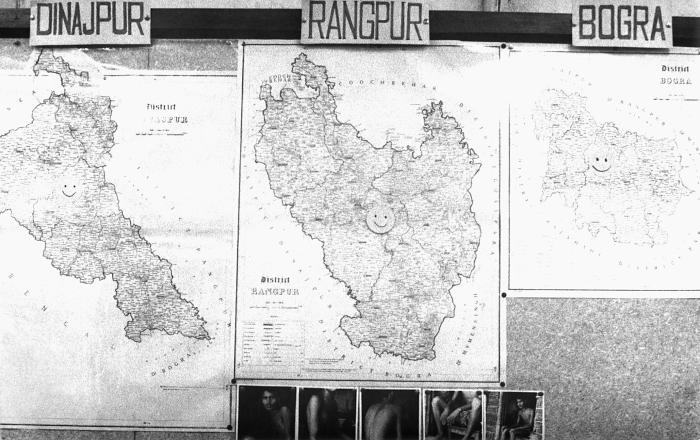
These three maps represented the three Bangladesh districts of Dinajpur, Rangpur, and Bogra that at the time this 1975 photograph was captured, were deemed free of smallpox. Their fascination with the 'smiley face' emblem inspired the Soviet press to adhere them to the front of each smallpox-free map.